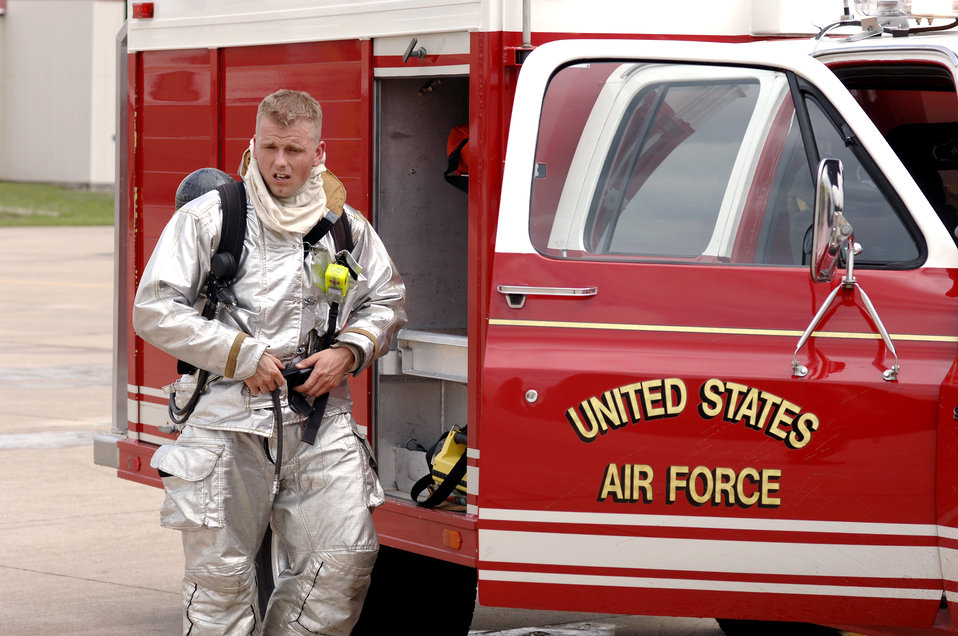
Firefighter training

Staff Sgt. Luca Shearer removes his fire protection suit after participating in an aircraft fire exercise on Sunday, May 7, 2006, in Tulsa, Okla. He is assigned to the Air National Guard's 138th Civil Engineer Squadron in Tulsa.